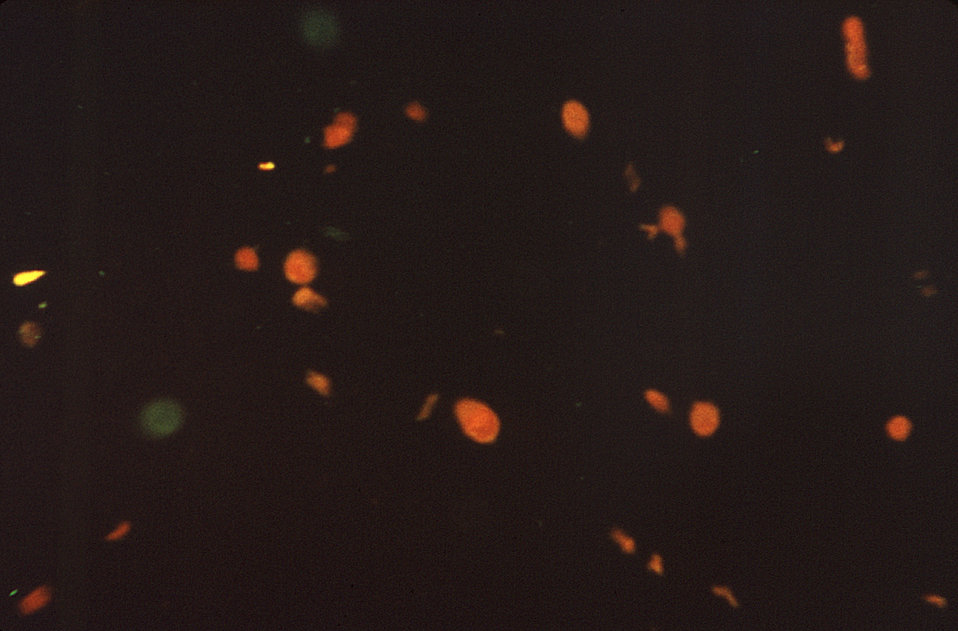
Under a low magnification of 78X, and stained using an indirect fluorescent antibody (IFA) test, this photomicrograph confirmed the presence of Schistosoma mansoni trematodes.Laboratory Diagnosis for Schistosomiasis: